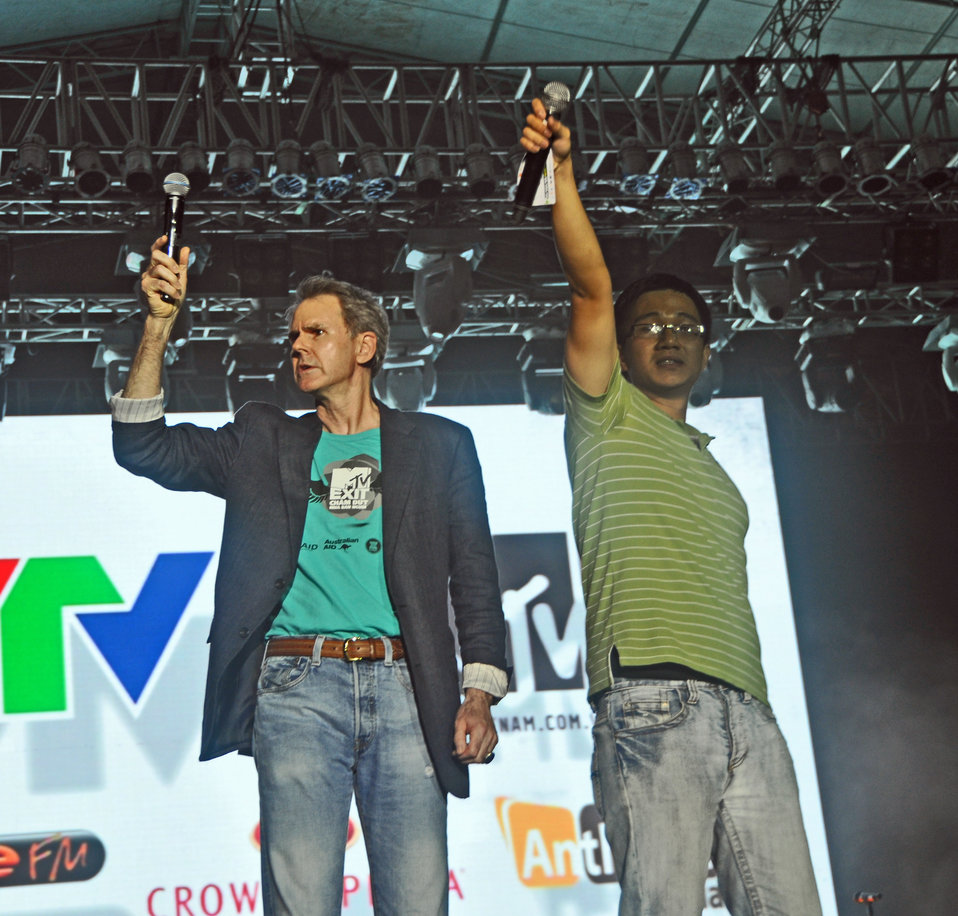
U.S. Ambassador to ASEAN, David L. Carden, challenges youth to 'stay angry and stay young' by fighting human traficking

USAID co-sponsors MTV EXIT concert, campaign against human trafficking